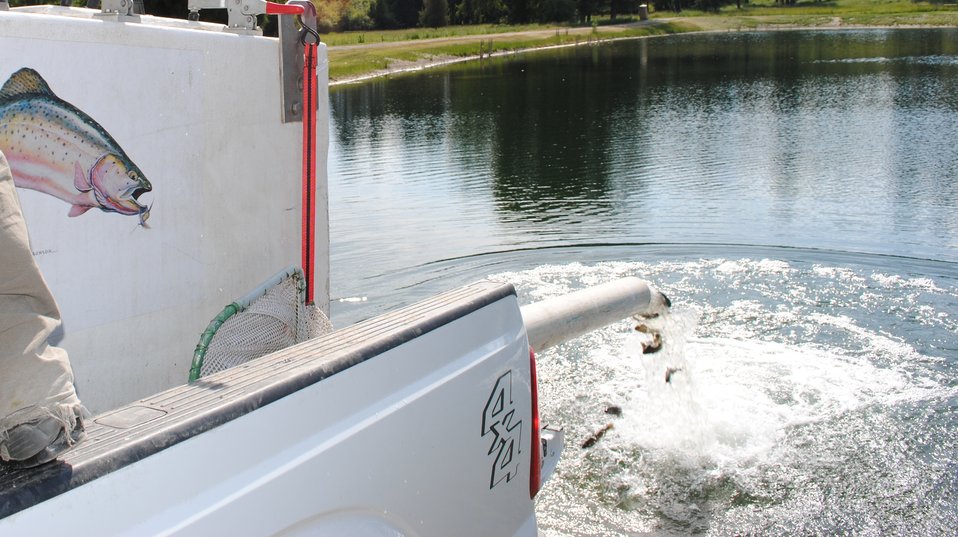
Creston National Fish Hatchery Stocking Local Family Pond